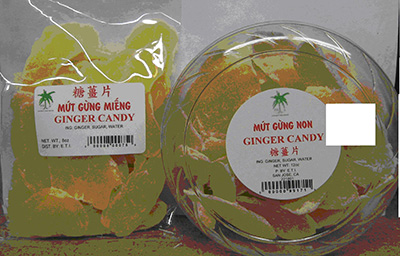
RECALLED – Ginger Candy

August 2, 2012 – Product Recall – Evershing International Trading Inc. Announces Recall of Ginger Candy.